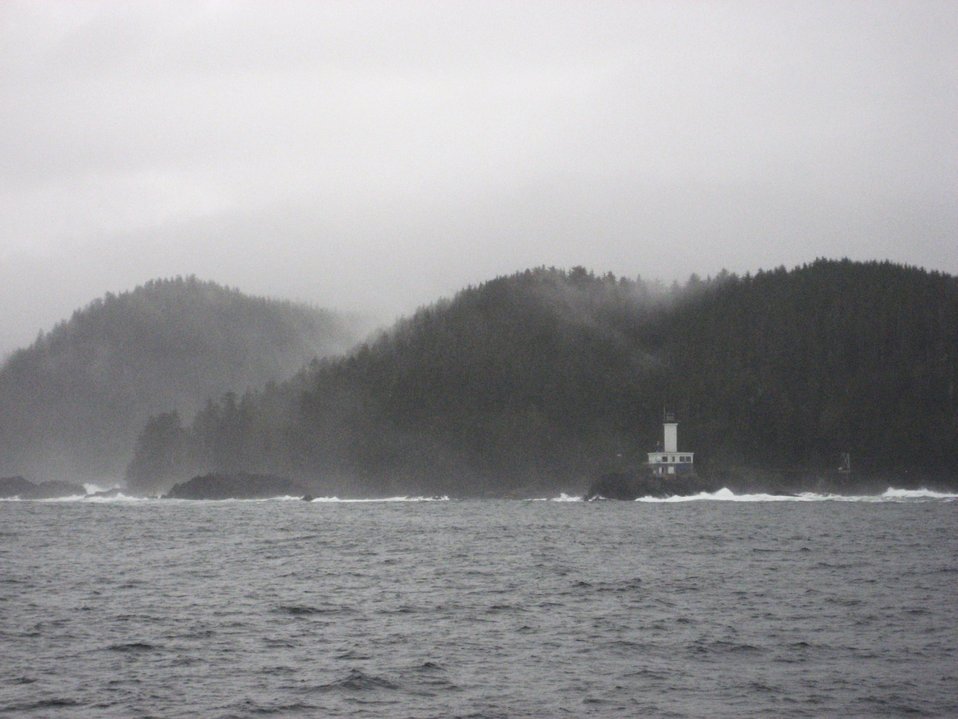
Cape Decision Lighthouse